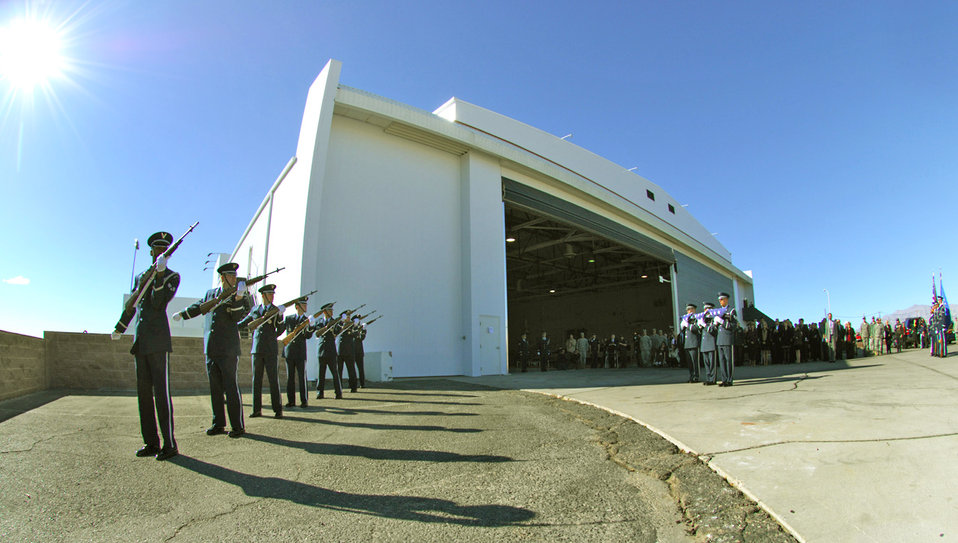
Thunderbird returns to Nellis for final farewell

Honor guard members perform a rifle volley salute in honor of Maj. Russell Goodman outside the Thunderbird hanger Jan. 14, 2010, at Nellis Air Force Base, Nev. Major Goodman served as the narrator for the Air Force Thunderbirds from 1964 to 1965 and was declared missing in action after his aircraft was hit by a surface-to-air missile in February 1967 while on a combat mission over North Vietnam.